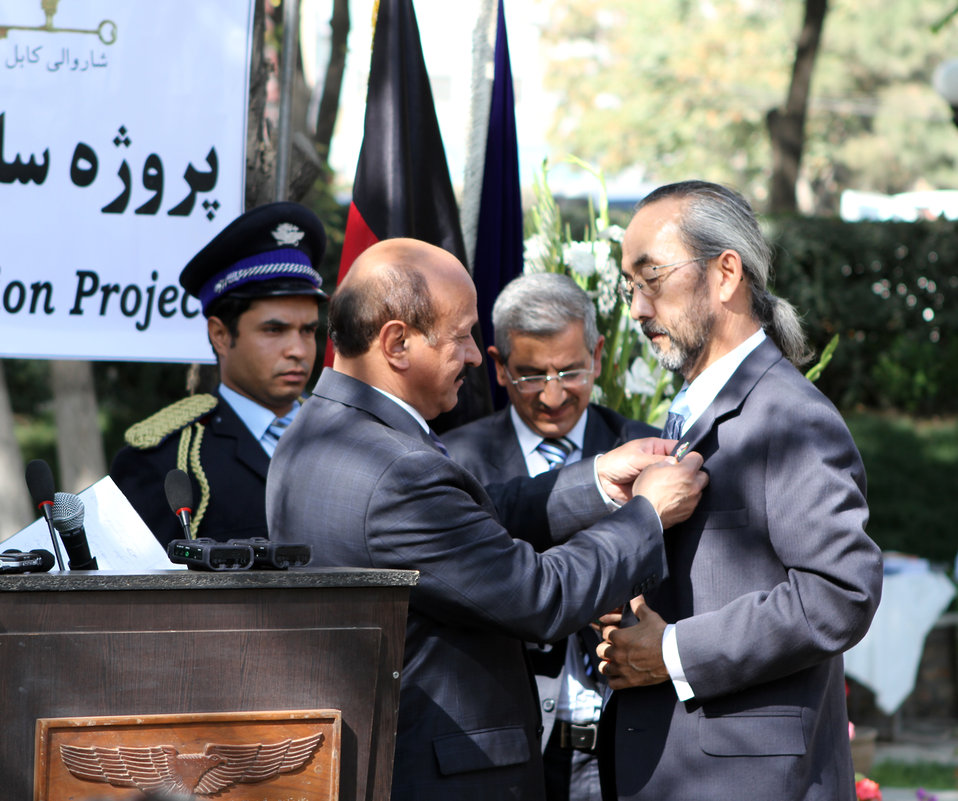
Dr.Ken Yamashita received a medal from Kabul mayor